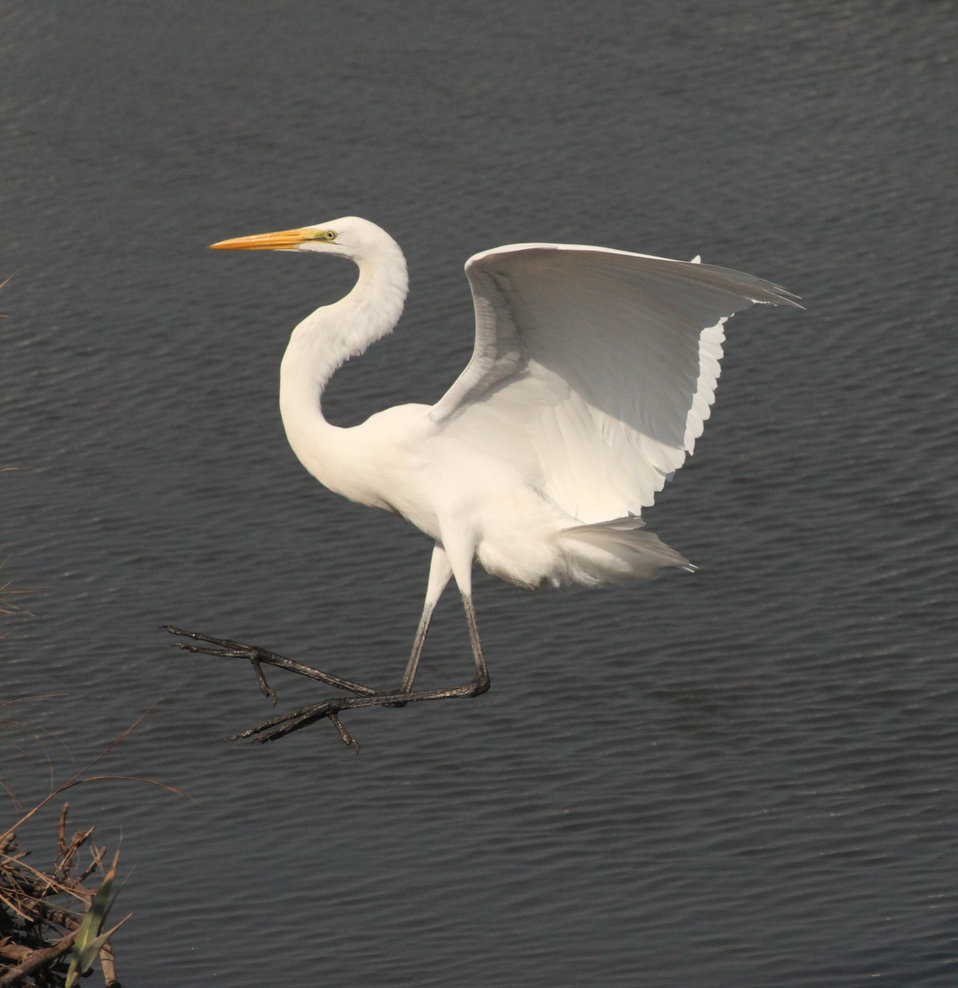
A white great egret at Edwin B. Forsythe National Wildlife Refuge, NJ.